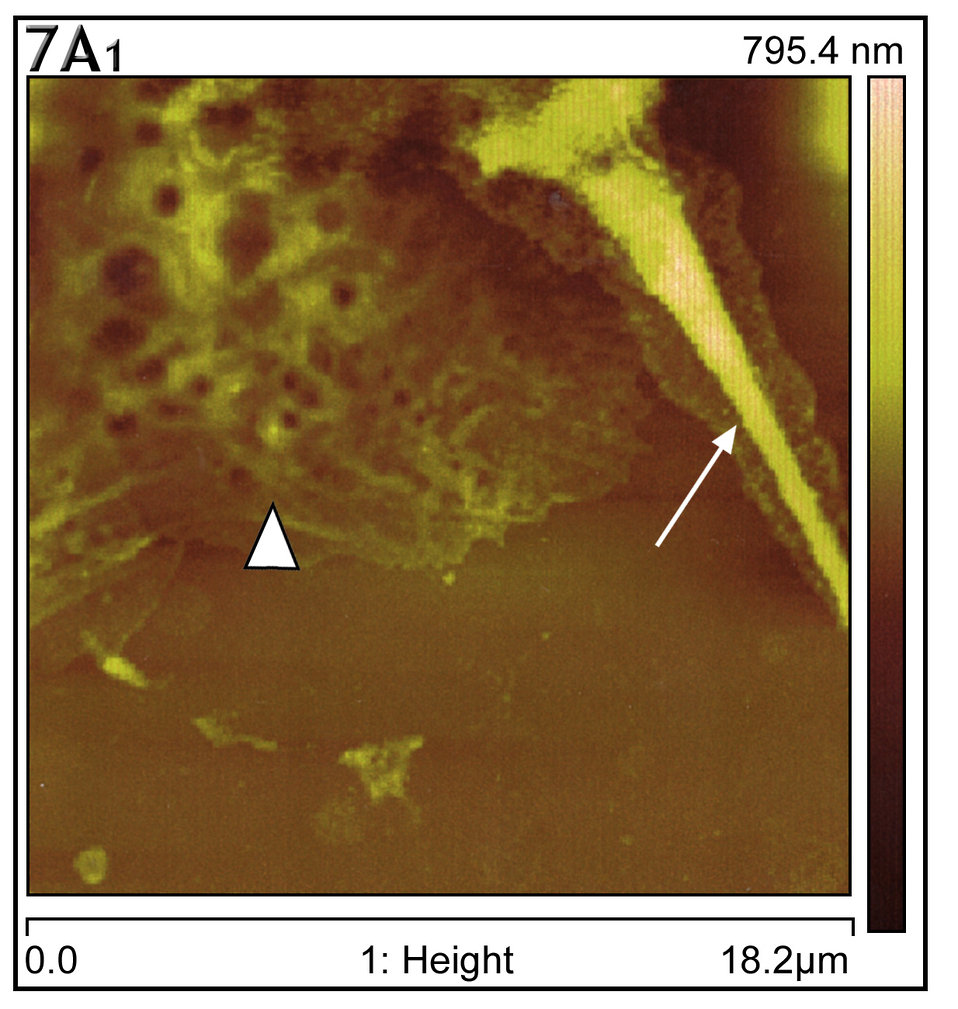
This AFM showed gross thickening of cell cytoplasmic skeletal filaments (arrowhead) and pseudopodia (arrow).